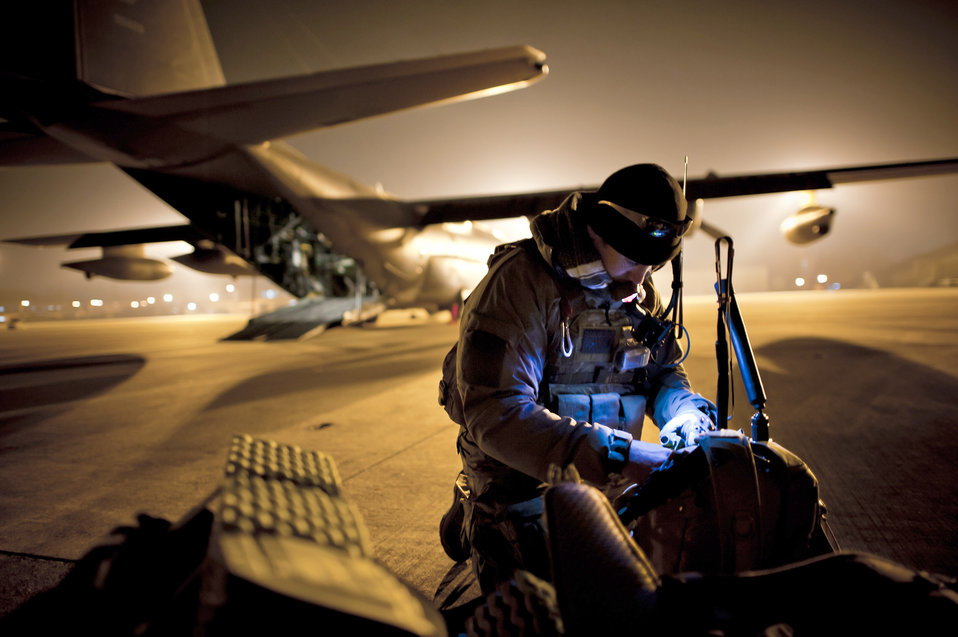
Headline

U.S. Air Force Tech. Sgt. Ray Decker from the 320th Special Tactics Squadron (STS) prepares his rucksack prior to boarding a U.S. Air Force MC-130P Combat Shadow aircraft at Yokota Air Base, Japan, March 16, 2011. Members of the 320th STS from Kadena Air Base, Japan, deployed to Sendai Airport to help clear the runway and make it ready for fixed-wing aircraft traffic.